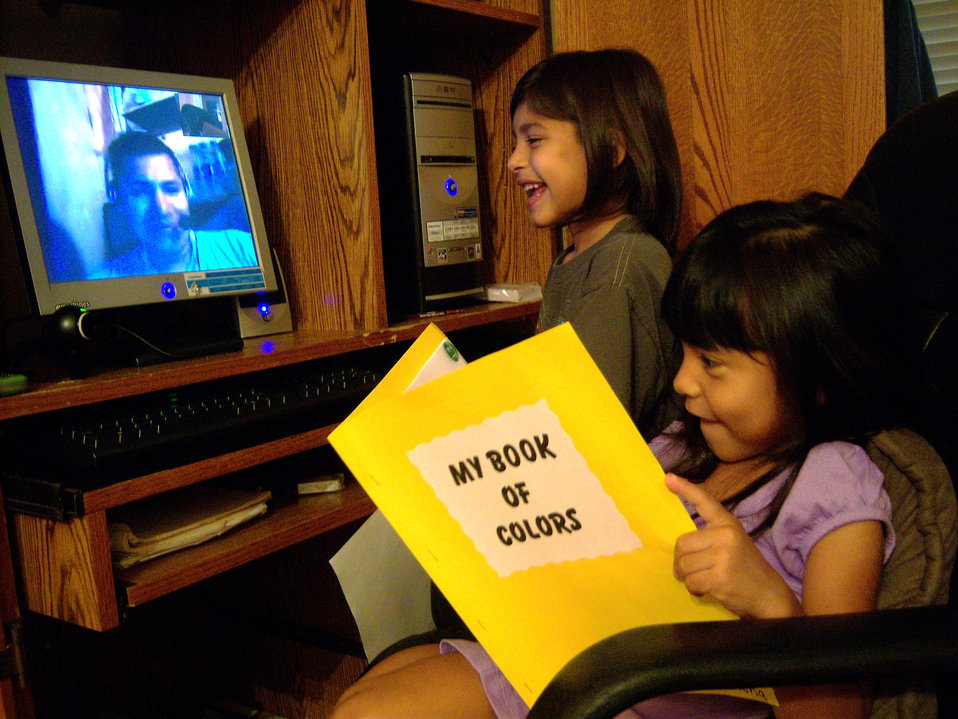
Family uses technology to cope with deployment separation

J.J. (standing) and Elena Gutierrez talk to their father over the Internet Sept. 26, 2009, from Randolph Air Force Base, Texas, while he's deployed to Bagram Airfield, Afghanistan. Staff Sgt. Juan Gutierrez, assigned to the 12th Dental Squadron, and his family use computers, Web cams and microphones to see and hear each other almost daily during his six-month deployment.